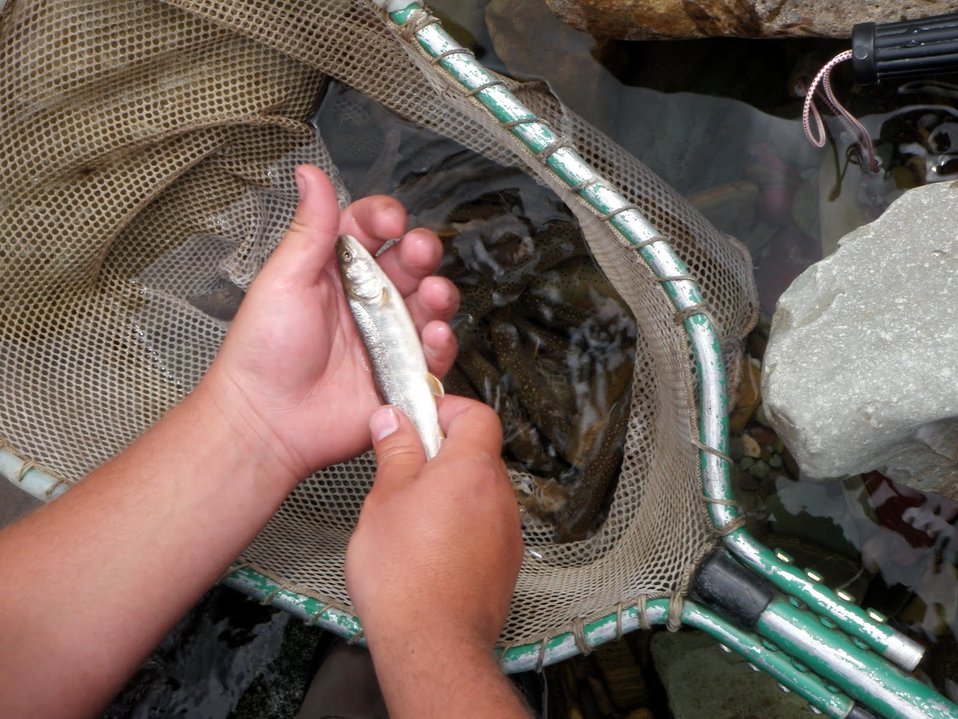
Juvenile Bull Trout

A team of USFWS biologist set out to survey the bull trout population in St. Mary's basin in the summer of 2010. Picture is a baby bull trout.